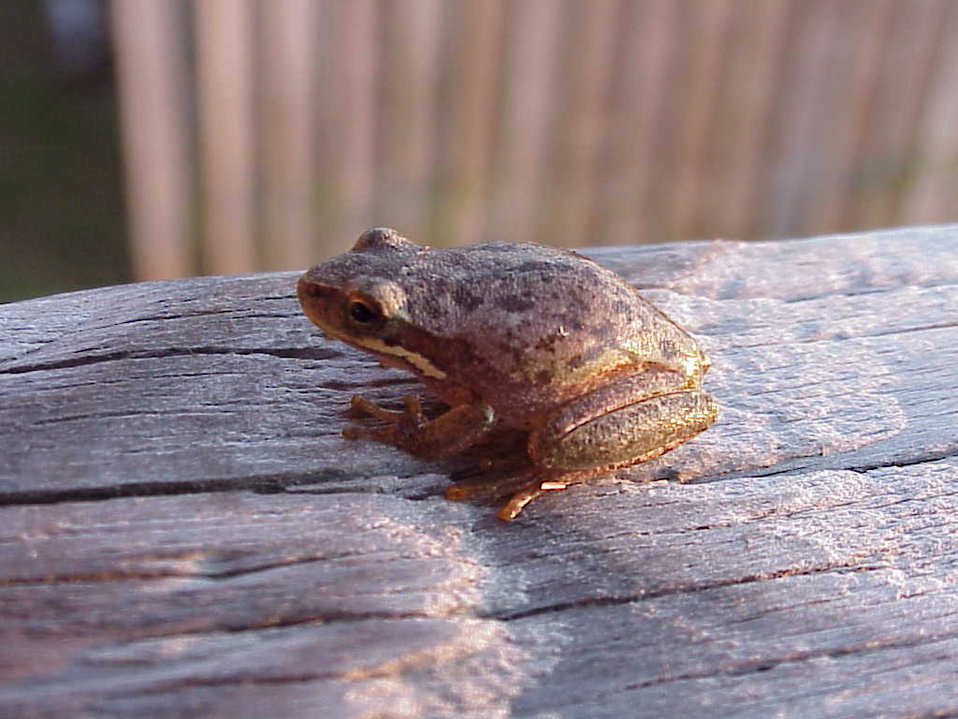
Chorus frog at Back Bay National Wildlife Refuge in Virginia.